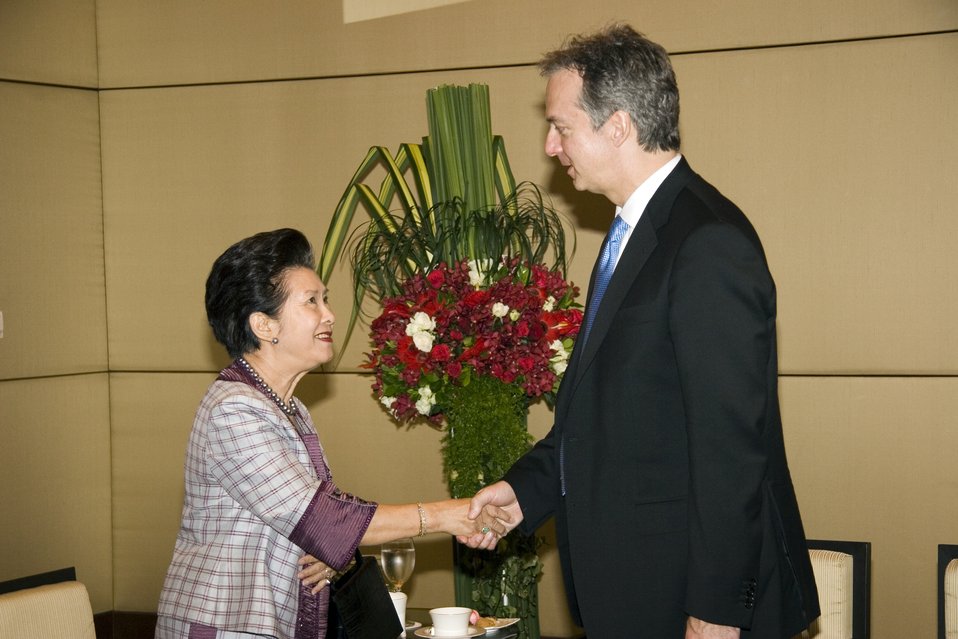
U.S. Ambassador to Thailand Meets With Thai Queen’s Lady-in-Waiting

U.S. Ambassador to Thailand Eric G. John shakes hands with the Queen’s Lady-in-Waiting, Thanpuying Nravadi Chaixanien, at the Conrad Hotel in Bangkok, Thailand July 21, 2009.